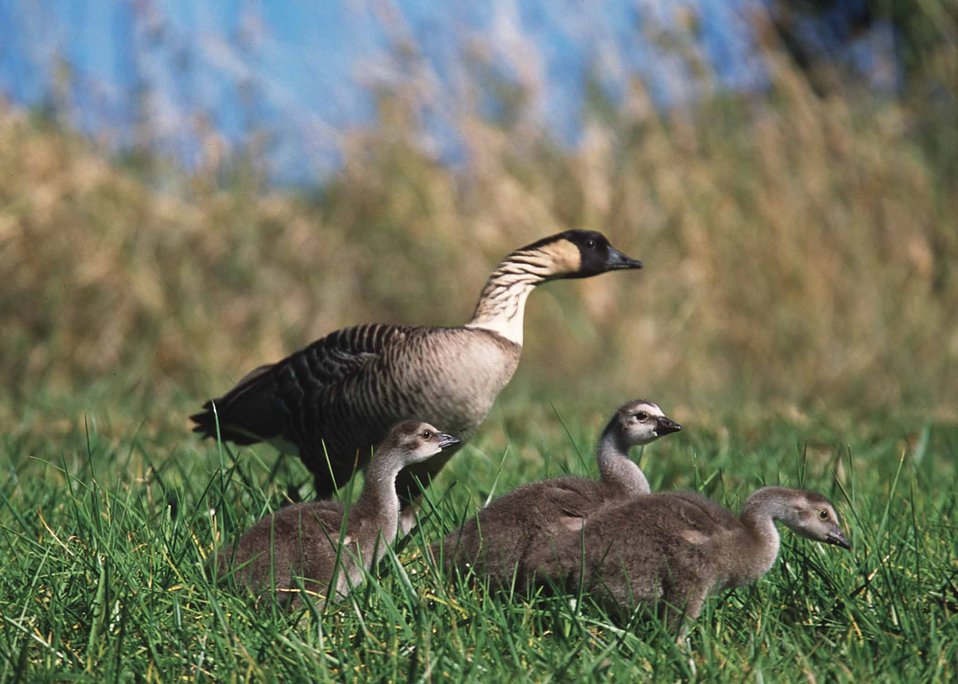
The Nene goose in Hawaii.